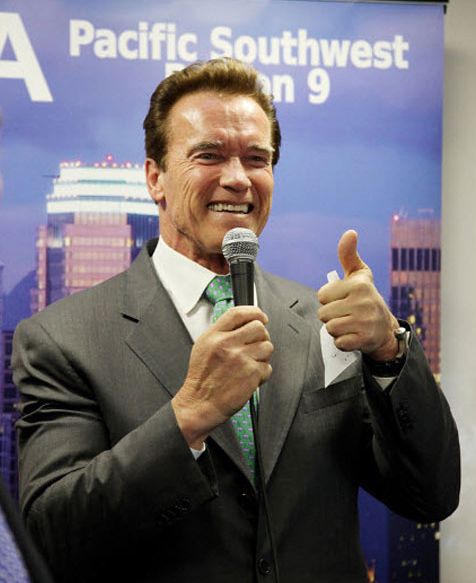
Schwarzenegger-thumbsup

US EPA's Pacific Southwest office recognized individuals and organizations for working to protect public health and the environment at an event on December 2, 2010 at the historic Union Station in Los Angeles, California. The photos have been moved to www.epa.gov/region9/awards/10/gallery/